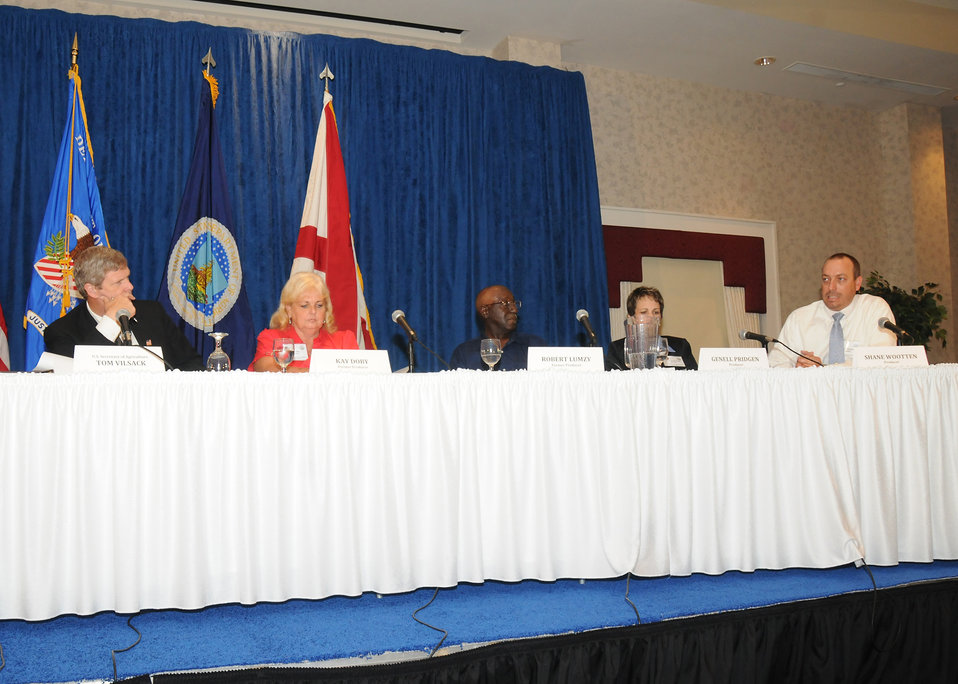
U. S. Department of Justice and the U S. Department of Agriculture hold a listening session on “Agriculture and Antitrust Enforcement Issues in Our 21st Century Economy “ with poultry farmers at Alabama A & M University in Normal, AL, on Friday, May 21, 2010. The late morning listening session had a panel consisting of nearby poultry farmers. ( L to R Agriculture Secretary Tom Vilsack, Kay Doby lives on a 3rd generation farm in Cameron, North Carolina, Robert Lumzy is presently a heavy equipment operator from Steele, Alabama, Sandra Genell Pridgen 7th generation family farmer from Snow Hill, North Carolina, and Shane Wooten poultry farmer and insurance agent in Henagar, Alabama) USDA photo 10di1361-307.